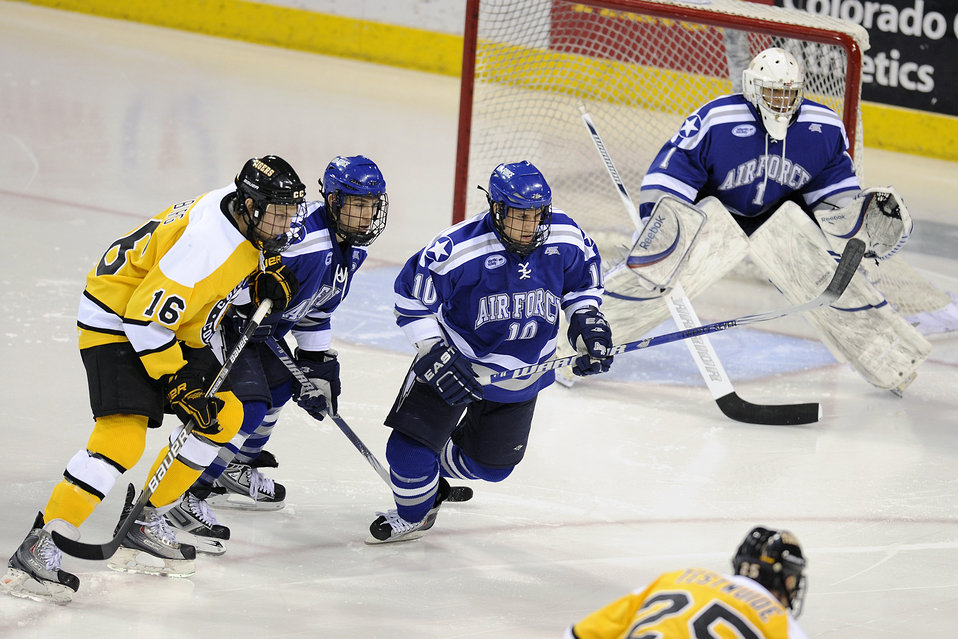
Falcons lose in match with Colorado Tigers

The Falcons defense has all eyes on the puck as 10th-ranked Colorado College beat Air Force 2-0 in a non-conference hockey game Feb. 5, 2010, at the World Arena in Colorado Springs, Colo.